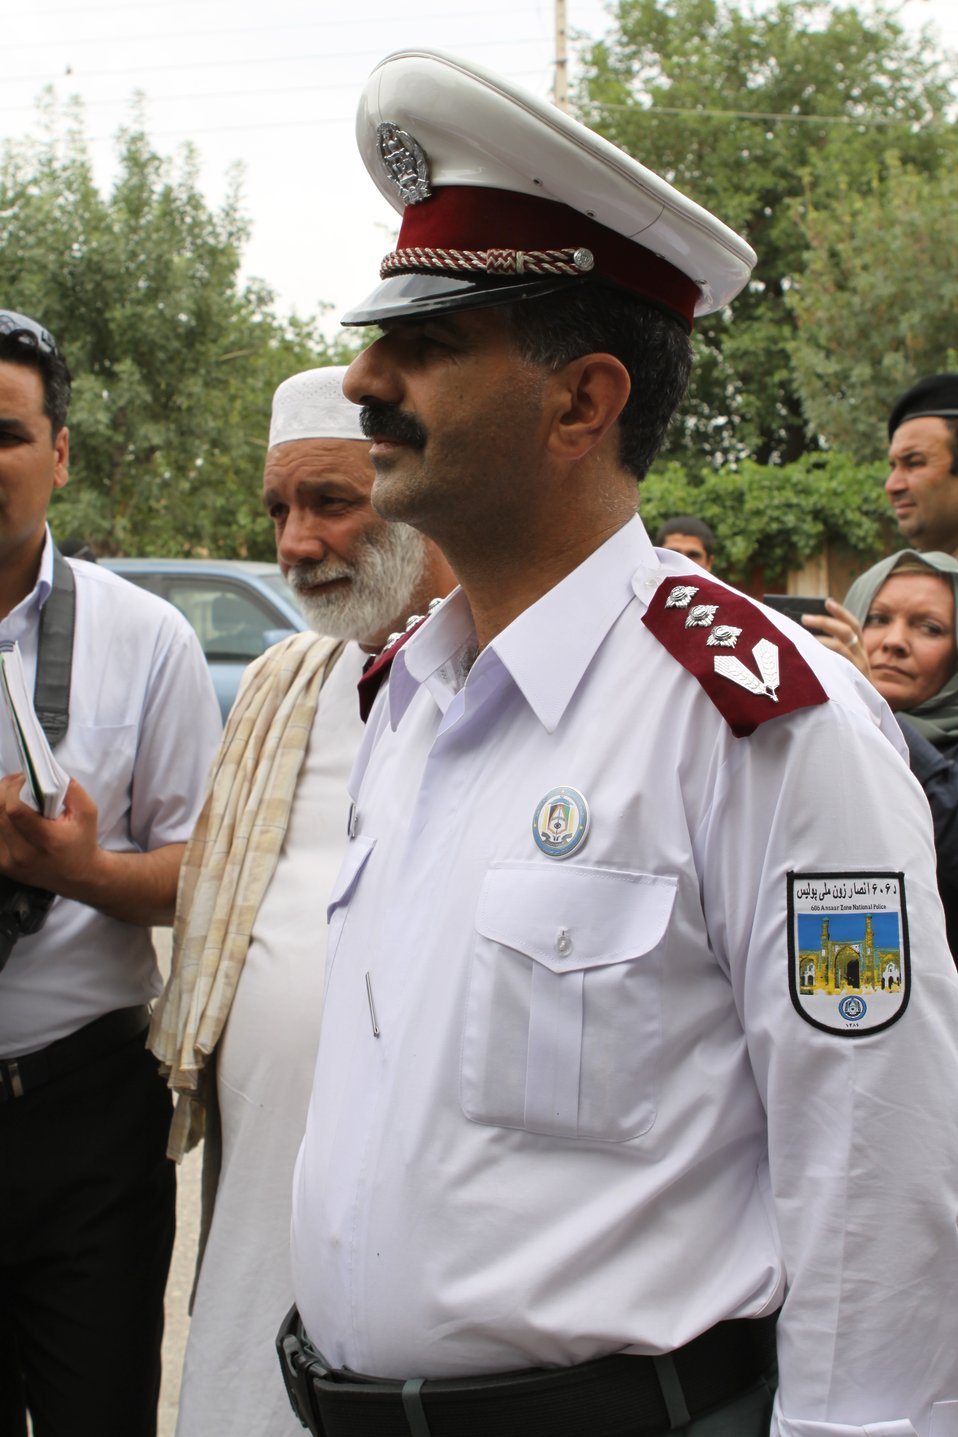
100525 Hirat Marble Conference 709